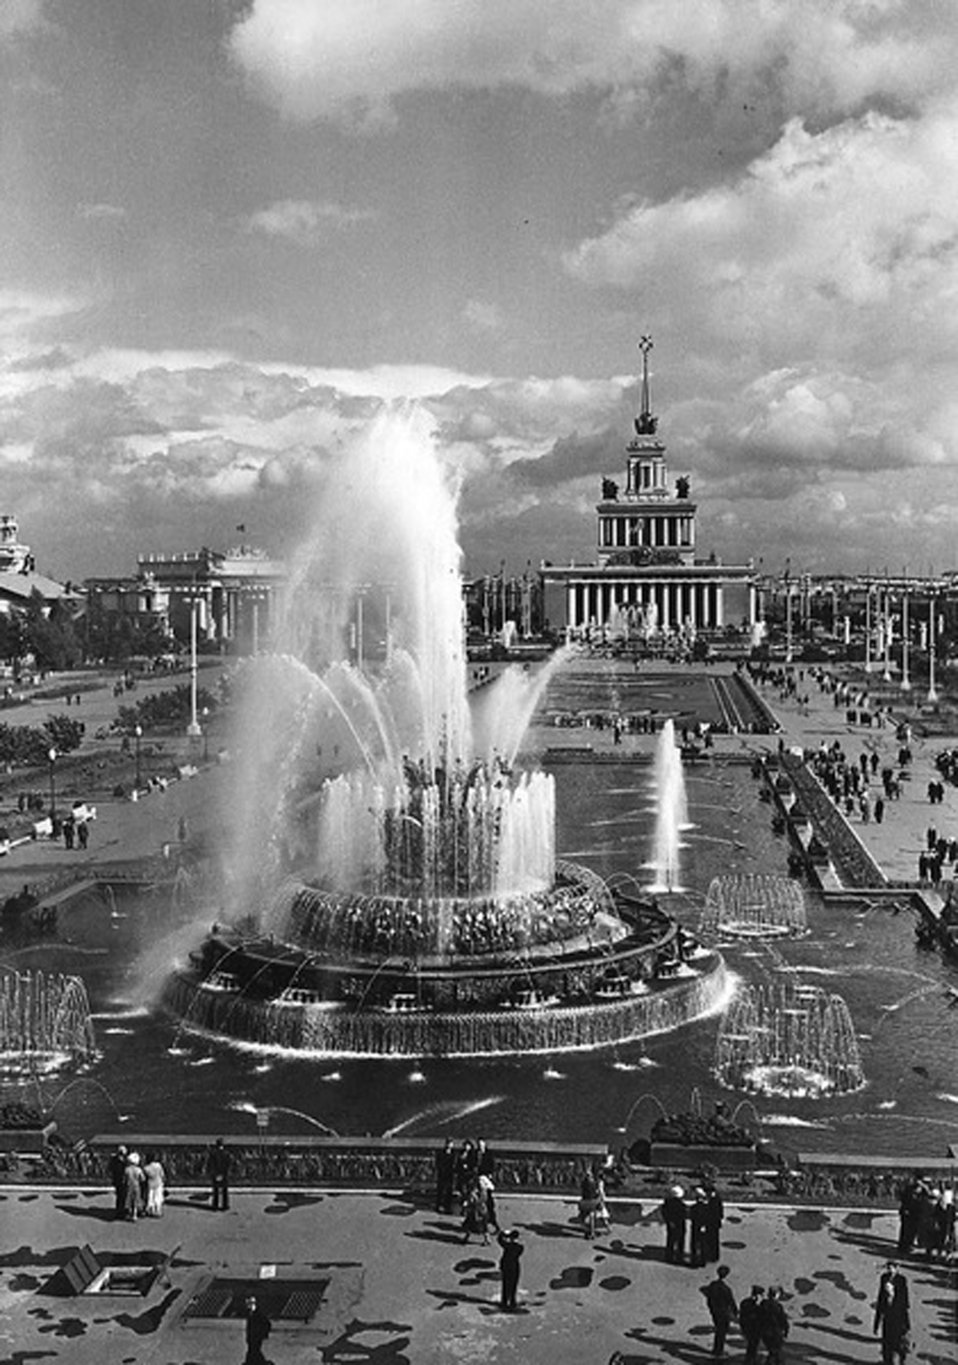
Русский: вид фонтана в 1950- е годы